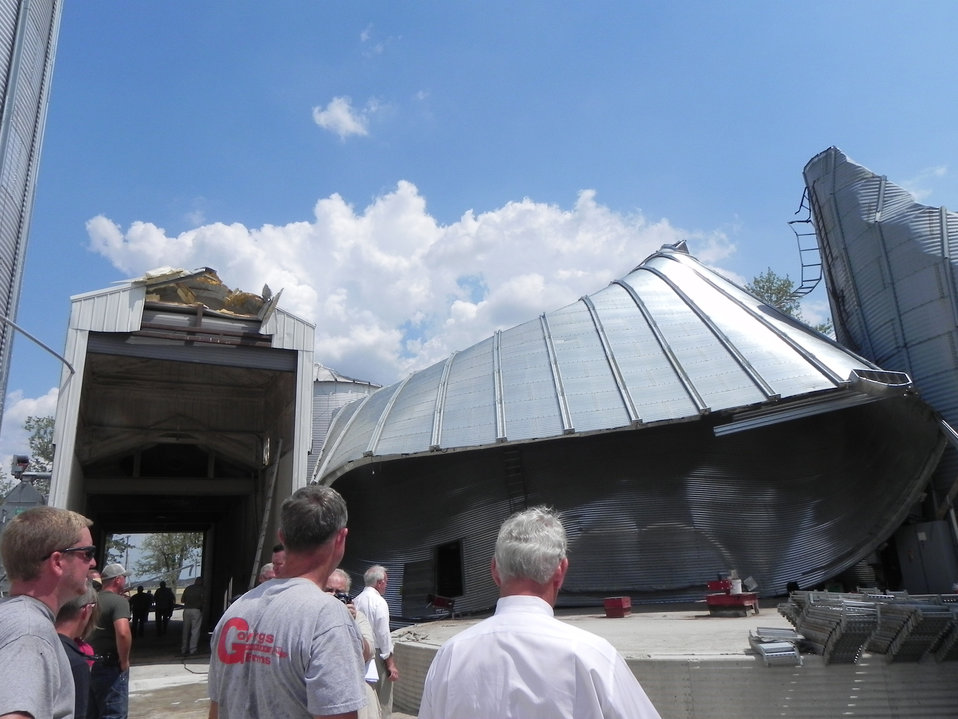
Agriculture Under Secretary for Farm and Foreign Agricultural Service (FFAS) Michael Scuse (right ) and Goyings farm owner Doug Goyings look over farm buildings damaged from a severe storm on June 29, 2012. Secretary Scuse toured the Goyings farm on Tuesday, July 17, 2012, in Paulding County, OH.